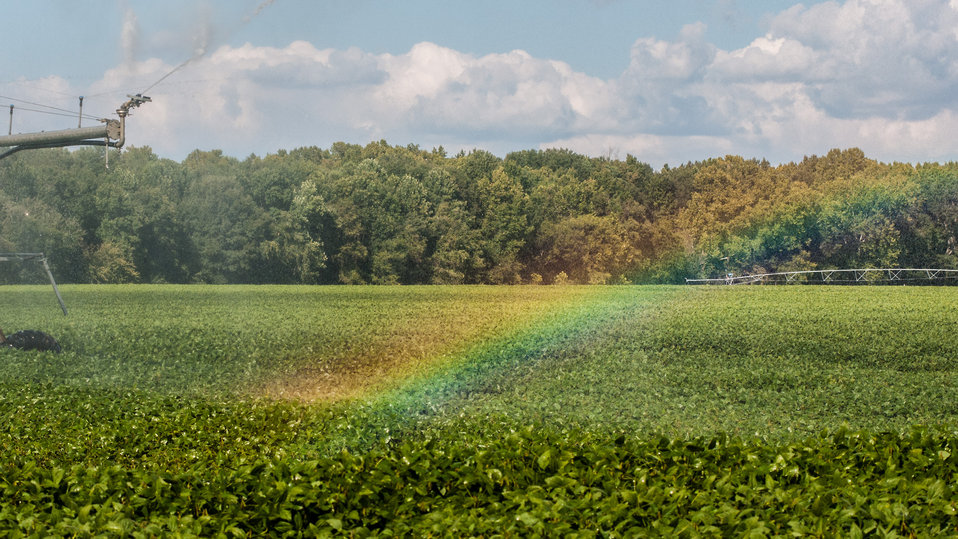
A rainbow created by mist from a pivot irrigation with rotating and end gun style pivot sprinkler in Hanover, Virginia, on Friday, Sept. 20, 2013.